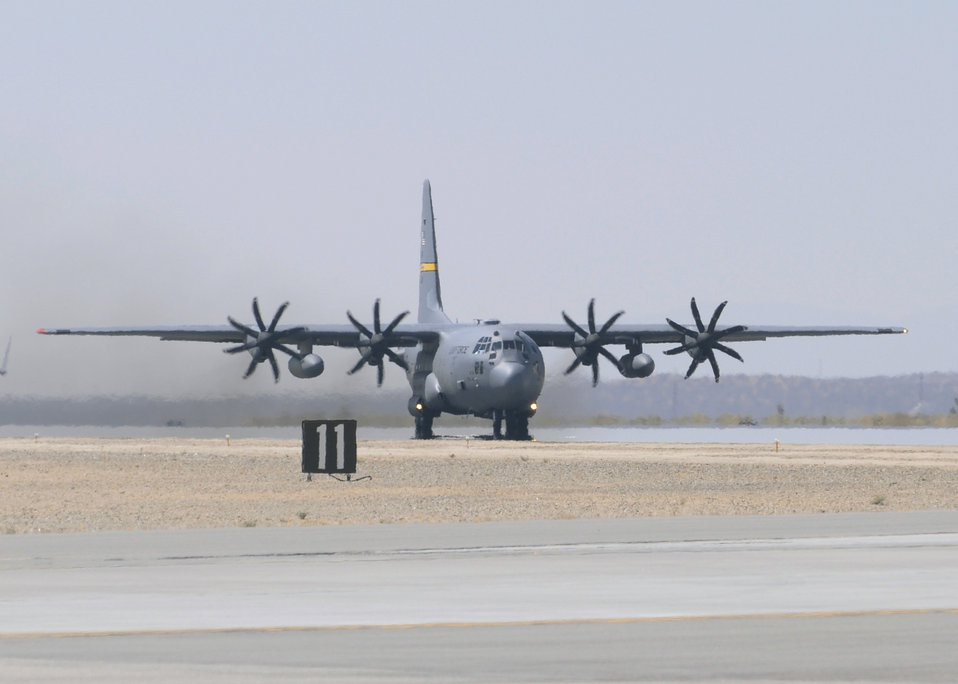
Blades PB

A C-130H3 with eight-bladed NP 2000 propellers taxis during a flight test recently at Edward AFB, Calif. The NP 2000 props are designed to provide more thrust and perform more efficiently.